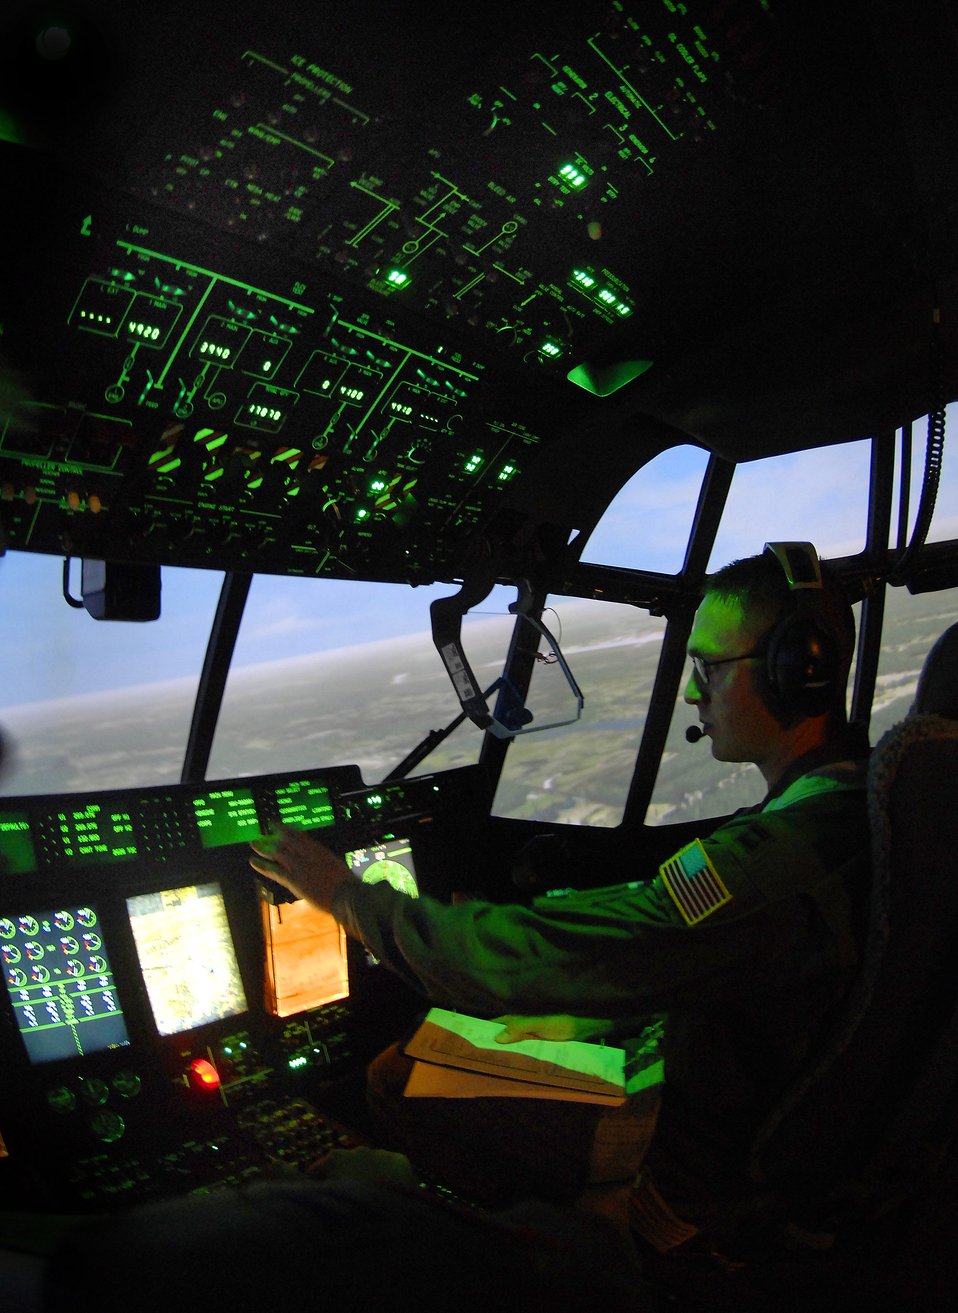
Training to make a herculean effort

Capt. Nathan Glasscock prepares to land while training on the C-130 model simulator at Little Rock Air Force Base, Ark., on Nov. 1. Captain Glasscock is a student at the C-130 Center of Excellence.